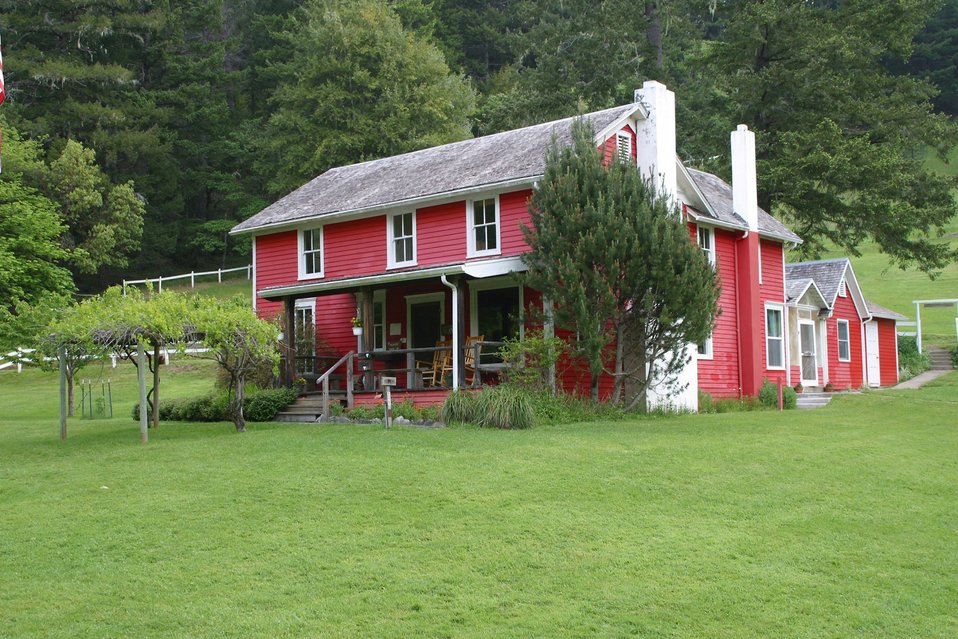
Wild section of the Rogue River from Grave Creek to Foster Bar May 19 to May 22.